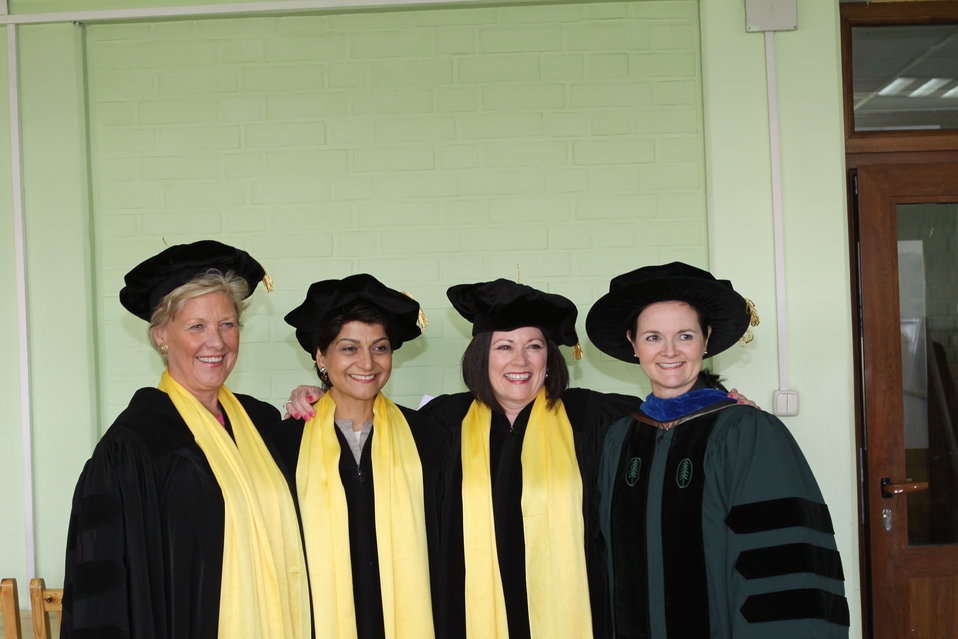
100526 AUAF Graduation 057